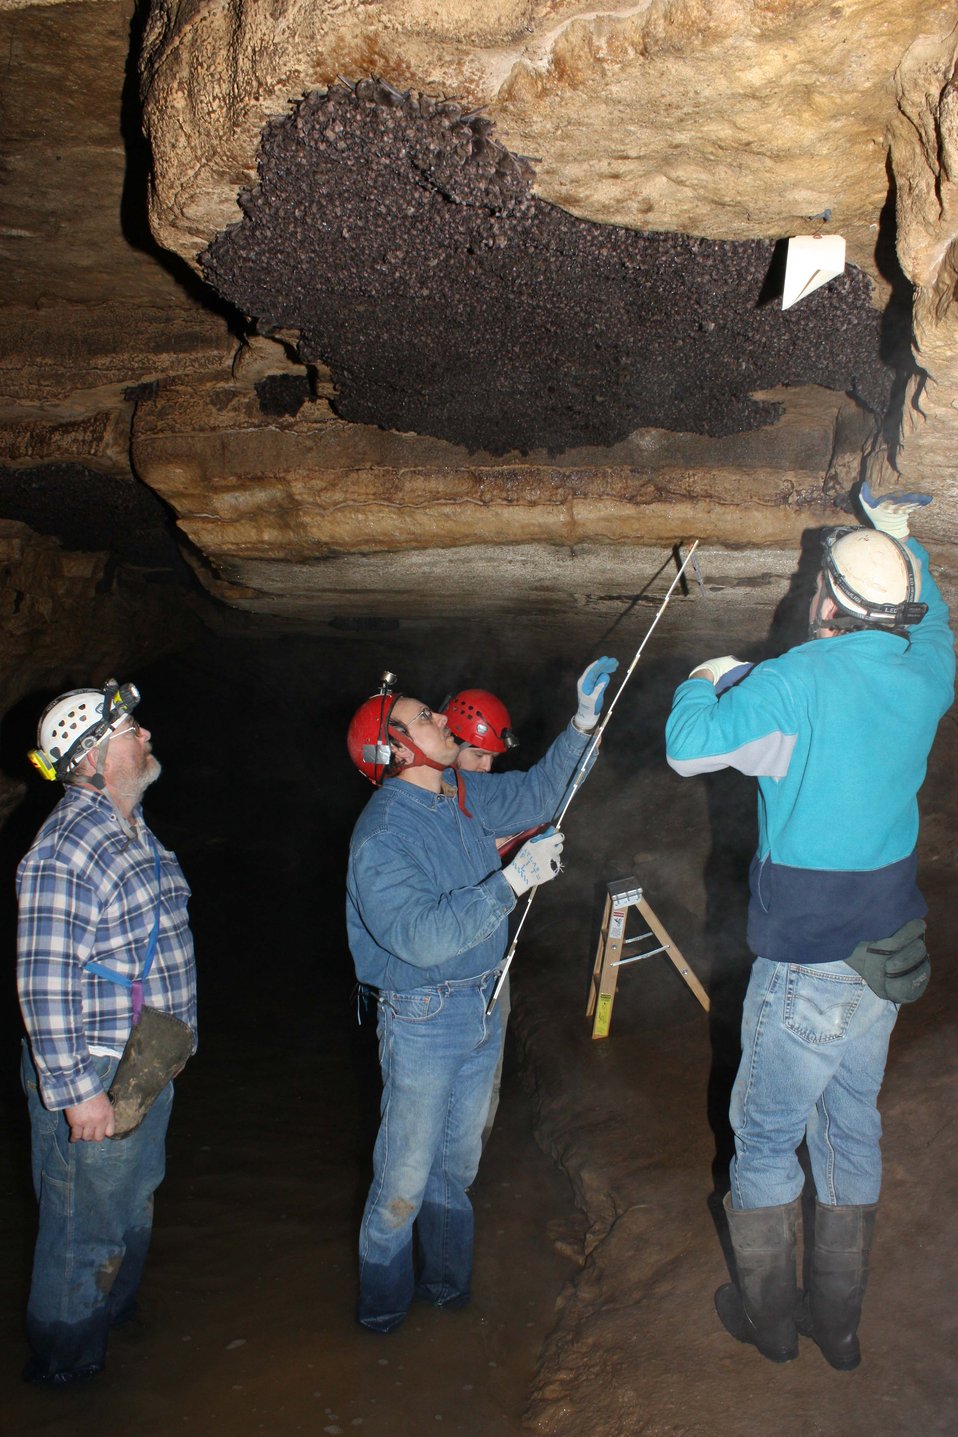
2009 Indiana bat survey

Credit: USFWS; Andrew King

Biologists are measuring the area of bat clusters to estimate numbers of hibernating bats. This is an older survey technique. The new technique is to take digital photos of the clusters and then count the number of bats on the photos.